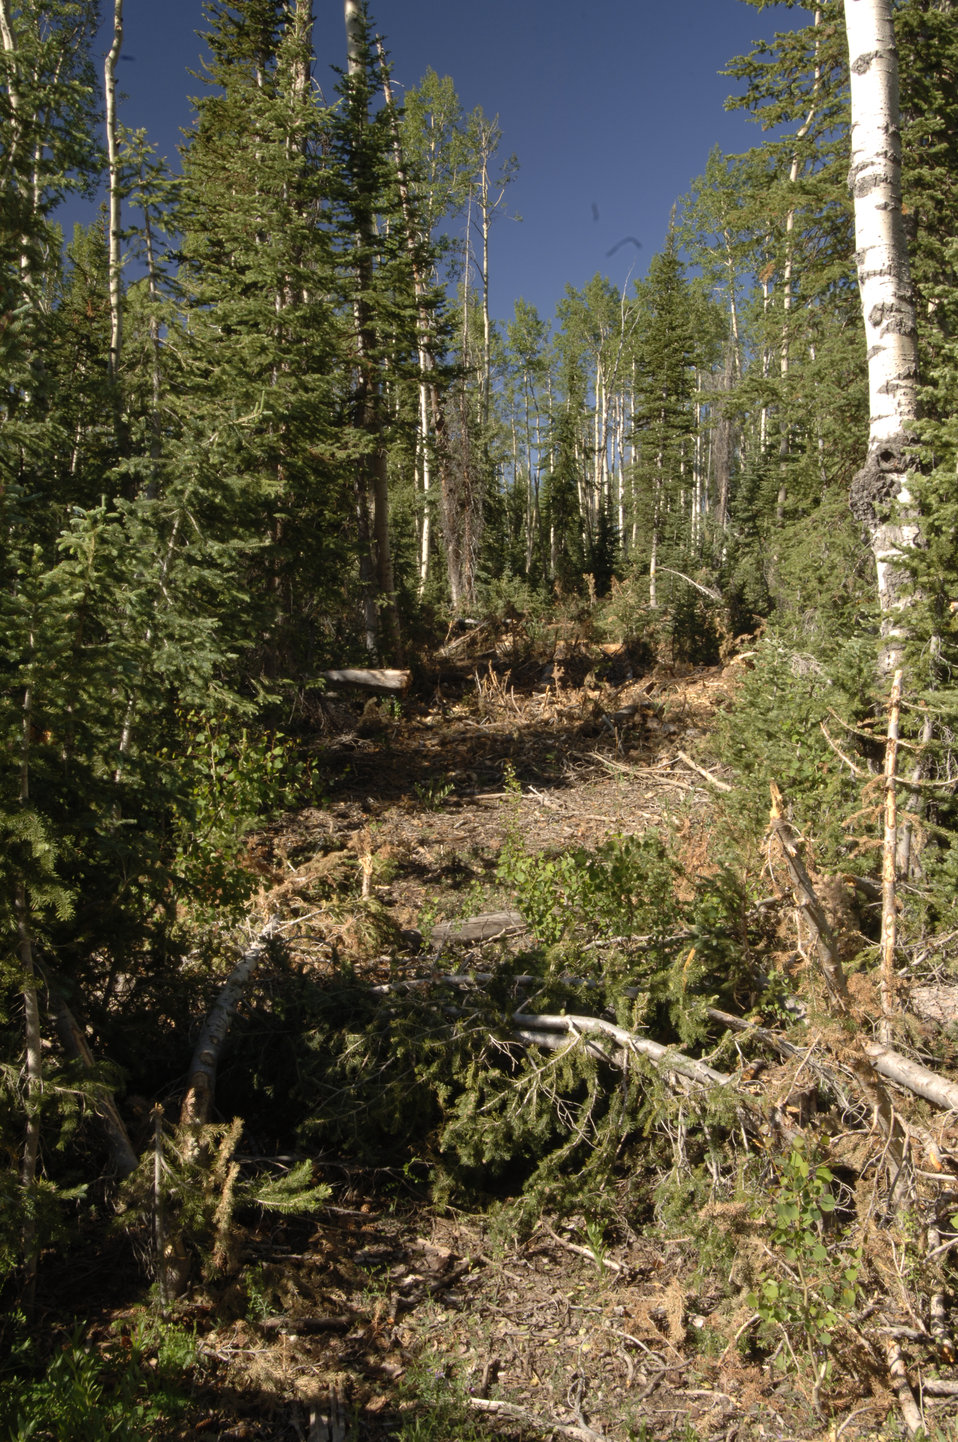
The U.S. Department of Agriculture (USDA) Forest Service (FS) is strongly committed to the management of the National Forests in an environmentally sound manner. The agency's top priority is to maintain and improve the health, diversity, and productivity of forest ecosystems for the enjoyment of current and future generations. Forest management includes guidance, administration, and support of the agency's forest products management and sales programs. Forest products include materials derived from a forest for commercial use such as lumber and paper, and also 'special forest products' such as medicinal herbs, fungi, edible fruits and nuts, and other natural products. This photo was taken at the Dixie National Forest in Utah on June 28, 2007.